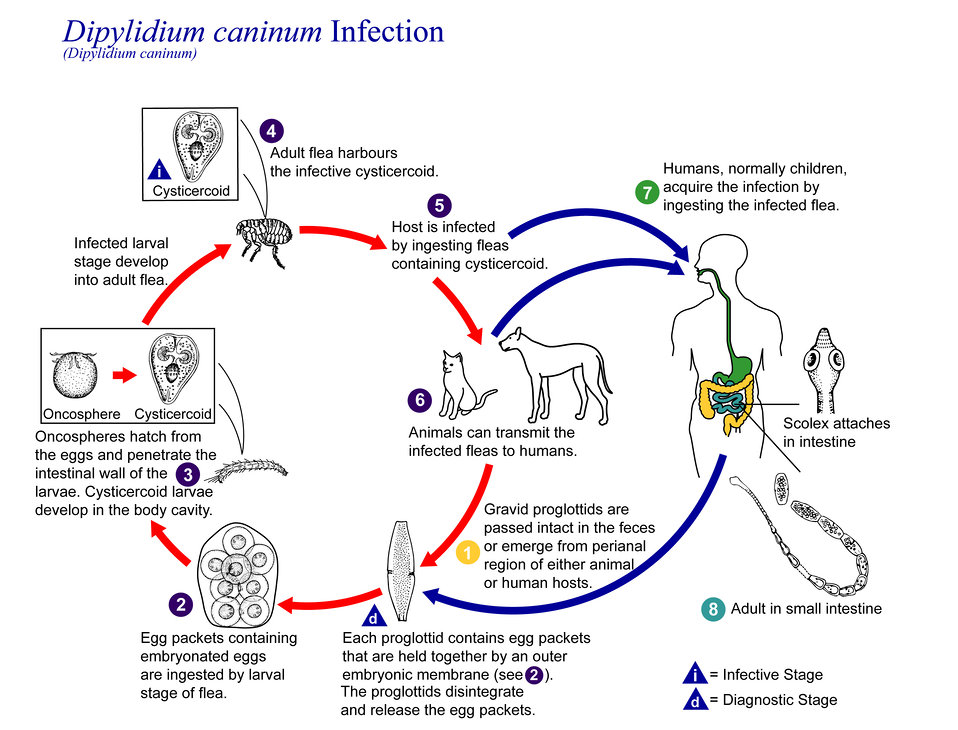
This is an illustration of the life cycle of Dipylidium caninum, which mainly infects dogs and cats, seldom in humans.